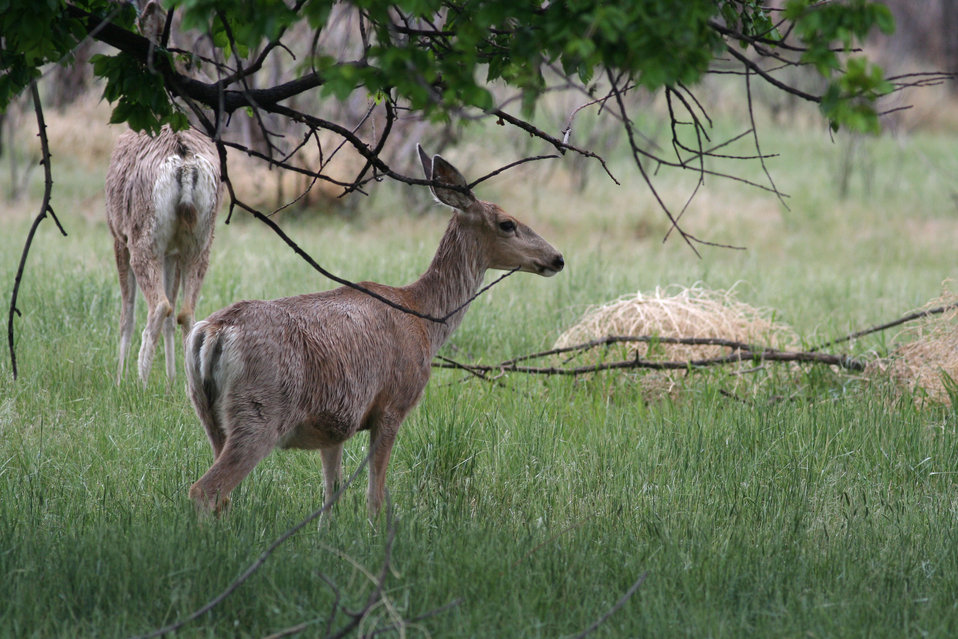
Does at RMA

A pair of does browse at Rocky Mountain Arsenal National Wildlife Refuge.